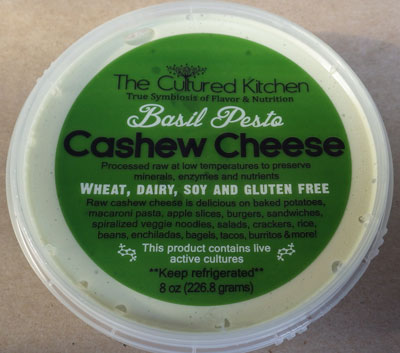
RECALLED – Non-dairy cashew cheese products

ecember 31, 2013 – The Cultured Kitchen® Voluntarily Recalls Cashew Cheese Due To Possible Risk Of Contamination From Salmonella
Photos.